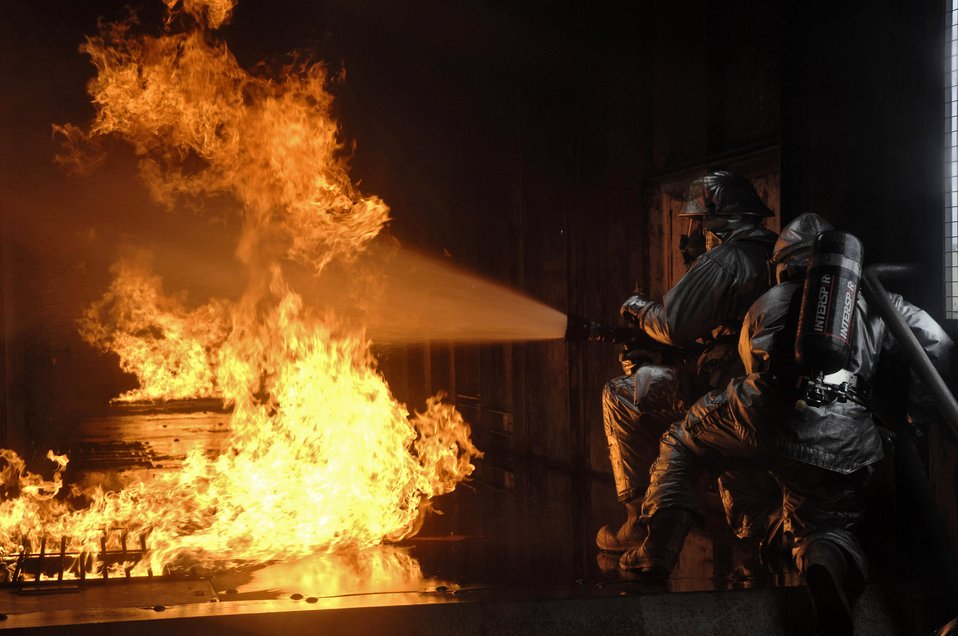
Extinguishing the beast

Firefighters from the 48th Civil Engineer Squadron extinguish a simulated battery fire inside an aircraft fire trainer March 8 at Royal Air Force Mildenhall, England.